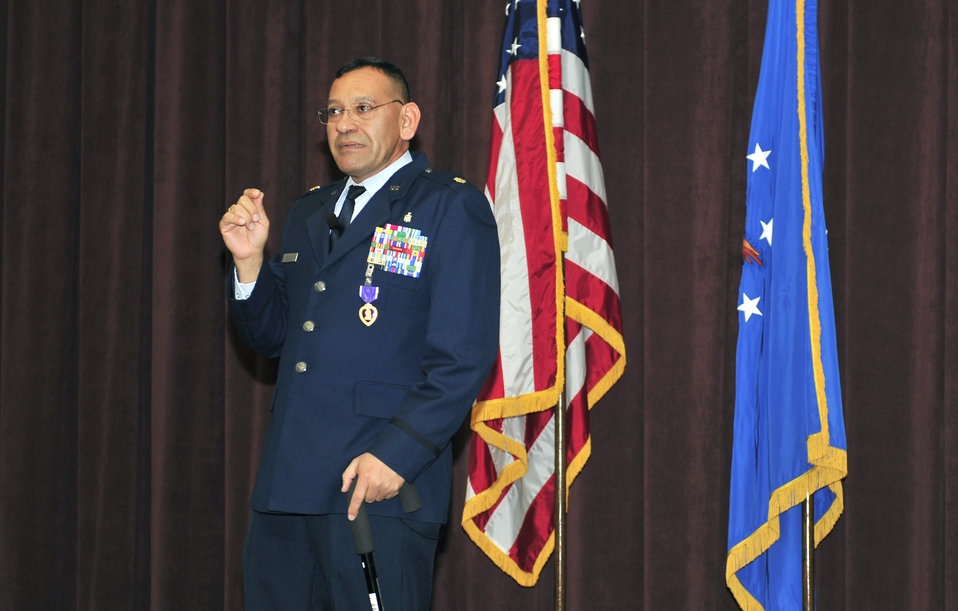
Purple Heart

Maj. George Zaldivar speaks at his ceremony after receiving a Purple Heart from Gen. Raymond Johns, the Air Mobility Command commander, Jan. 9, 2012, at Scott Air Force Base, Ill. Zaldivar distinguished himself during a deployment to Kandahar, Afghanistan, in 2011 when he treated injured Airmen and prevented a fire after a rocket landed in their aeromedical evacuation building.